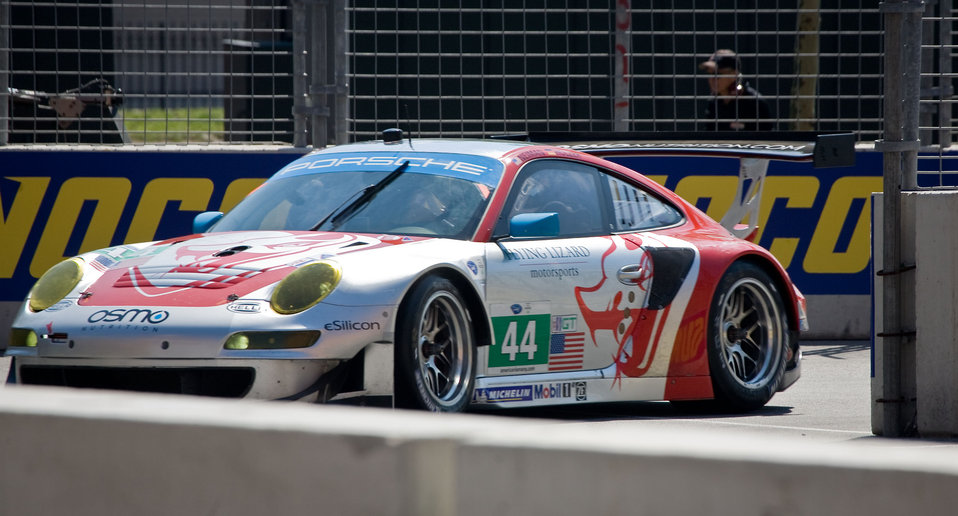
The Number 44, Porsche GT3 911 RSR of the Flying Lizard Motorsports Team uses E85 fuel for the American Le Mans Series (ALMS) motorsport series at the Baltimore Grand Prix, on the streets of downtown Baltimore, MD, on Friday, August 31, 2012, Labor Day Weekend. ALMS says they are “the Global Leader in Green Racing by being the only racing series recognized to comply with the Green Racing protocols developed by the U.S. Department of Energy (DOE), the U.S. Environmental Protection Agency (EPA) and Society of American Engineers International (SAE).” Instead of high-octane gasoline all the cars in the series use one of 5 different forms of energy (system). Clean diesel, E85, E10, isobutanol or hybrid energy technology. The specific hybrid system, used by the Porsche GT3 cars, are a (battery-less) flywheel-based Kinetic Energy Recovery Systems. These organizations are accelerating technology development at speeds up to 200 mph, in 650-700 horsepower race cars that are based on two groups of cars; the purpose built prototype race cars and the GT
(Grand Touring) cars based on production sports cars that you can see in showrooms. From these groups, there are five classes of cars, all of which race at the same time during the race events.
The U.S. Department of Agriculture (USDA) focuses on renewable fuel sources that are profitable and sustainable. 2011 accomplishments include research and planning for renewable energy and investments in renewable energy production.
- Completed a Biofuels Roadmap proposing a plan of action to meet congressionally mandated RFS2 goals for national biofuels production.
-Coordinated five regional research centers to work on the science necessary to ensure profitable biofuels can be produced from a diverse range of feed stocks across the nation, not just in the Midwest where the industry is already thriving.
-Over three years, USDA invested about $320 million to accelerate research on renewable energy ranging from genomic research on bioenergy feedstock crops, to development of biofuel conversion processes and costs/benefit estimates of renewable energy production.
- More than 130 biodiesel and ethanol projects funded by USDA are currently producing almost 3.7 billion gallons of biodiesel and ethanol annually, enough fuel – in equivalence to gasoline – to keep five million vehicles on the road every year.
-We are supporting efforts to build five biorefineries to produce advanced biofuels in states from Florida and Michigan to New Mexico, with investments worth about $310 million. We are supporting facility upgrades and feasibility studies for advanced biofuels projects in every region of the country.